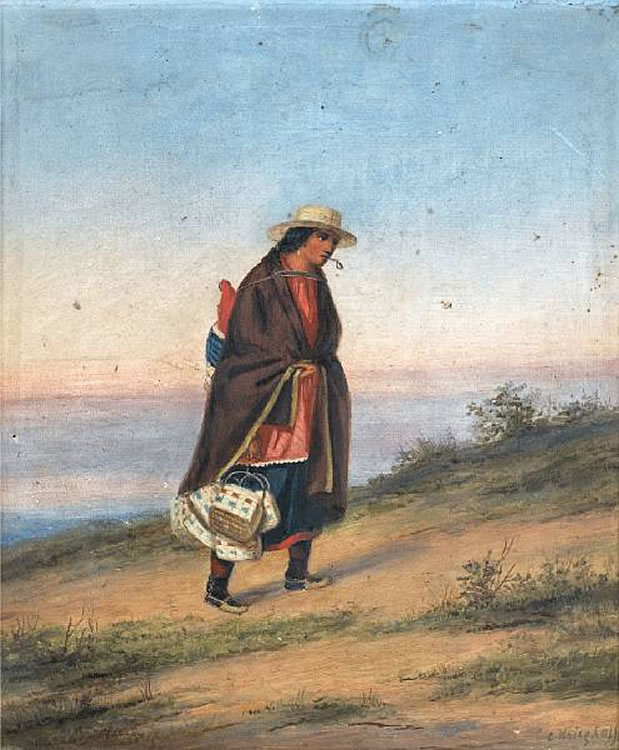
The basket seller, oil paintings by Cornelius Krieghoff, 11.4 x 9.8 in.